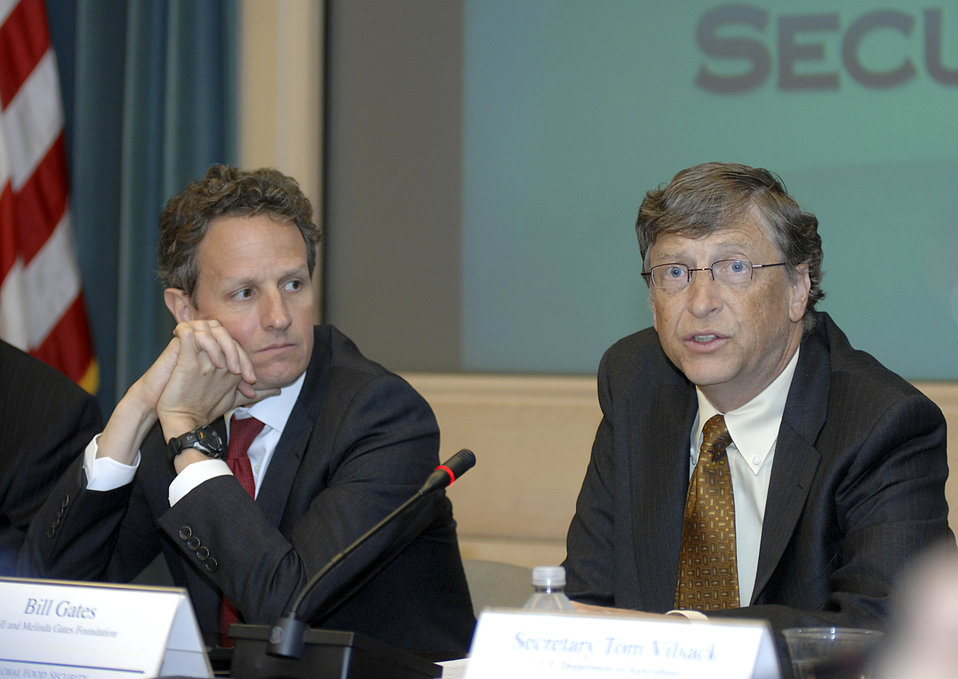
Announcement on International Commitment to Fight Global Hunger and Poverty, 4/22/10

Treasury Secretary Timothy Geithner and Bill Gates, Co-chair of the Bill & Melinda Gates Foundation, meeting about a new international commitment to fight global hunger and poverty at Treasury Department April 22, 2010.